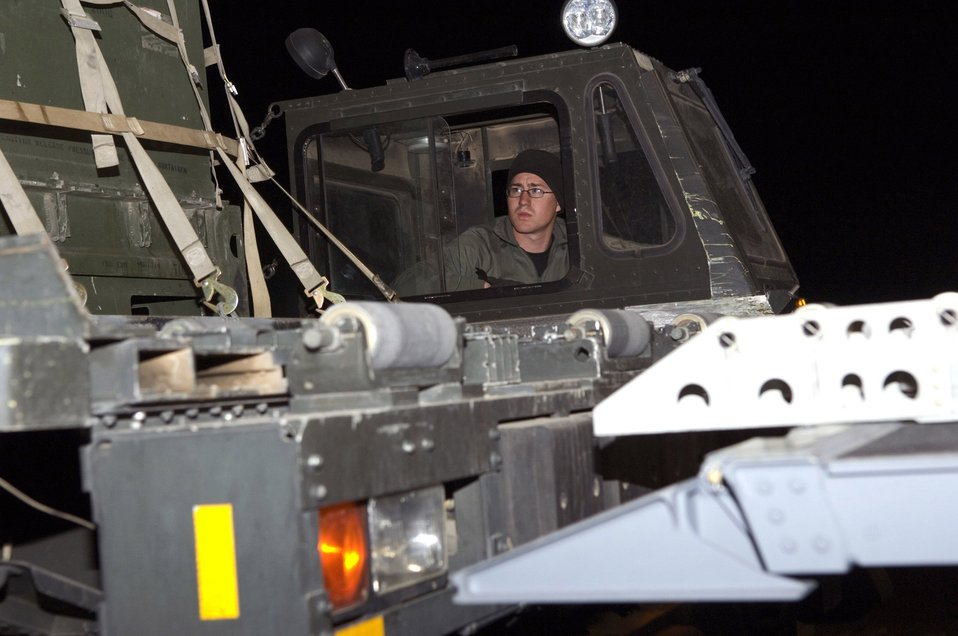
Balad aerial port bests cargo movement record

Senior Airman Jeff Johnson watches as the pallets come off the cargo loader onto an aircraft Dec. 8 at Balad Air Base, Iraq. The aircraft cargo loaders can move the cargo forward automatically, completing some of the grueling work often done by the aerial porters. Airman Johnson is a 332nd Expeditionary Logistics Readiness Squadron transportation specialist deployed from Altus Air Force Base, Okla.